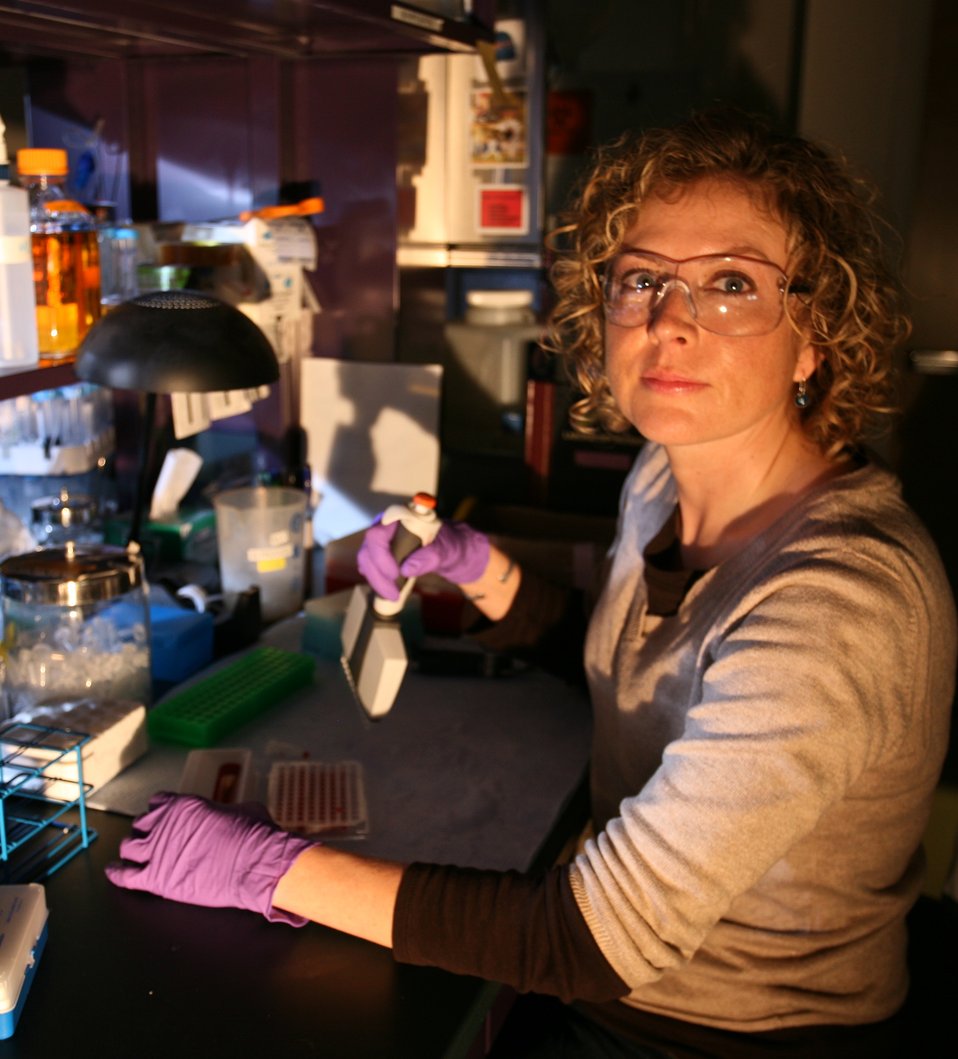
JENNIFER AMRTINEZ- CINT AT LOS ALAMOS NATIONAL LAB, DESIGNS AND CHARACTERIZES THE INTERFACE BETWEEN INORGANIC AND BIOLOGICAL SYSTEMS USING BIOMOLECULAR RECOGNITION STRATEGIES-GOAL OF CREATING FUNCTIONAL NANSCALE MATERIALS.

CINT is one of five NSRC's throughout the U.S. that form an integrated national program, affiliated with major facilities at the DOE's national laboratories, to cover the diverse aspects of nanoscience and technology. The complex aspires to become a cornerstone of the nation's nanotechnology revolution, contributing to DOE's principle missions in national defense and the environment while providing an invaluable resource for universities and industries. It's core facility in Albuquerque and gateway facilities at Los Alamos and Sandia National Laboratories. CINT provides open aces to tools and expertise needed to explore the continuum from scientific discovery to the integration of nanoscience into the Micro and Marco world.